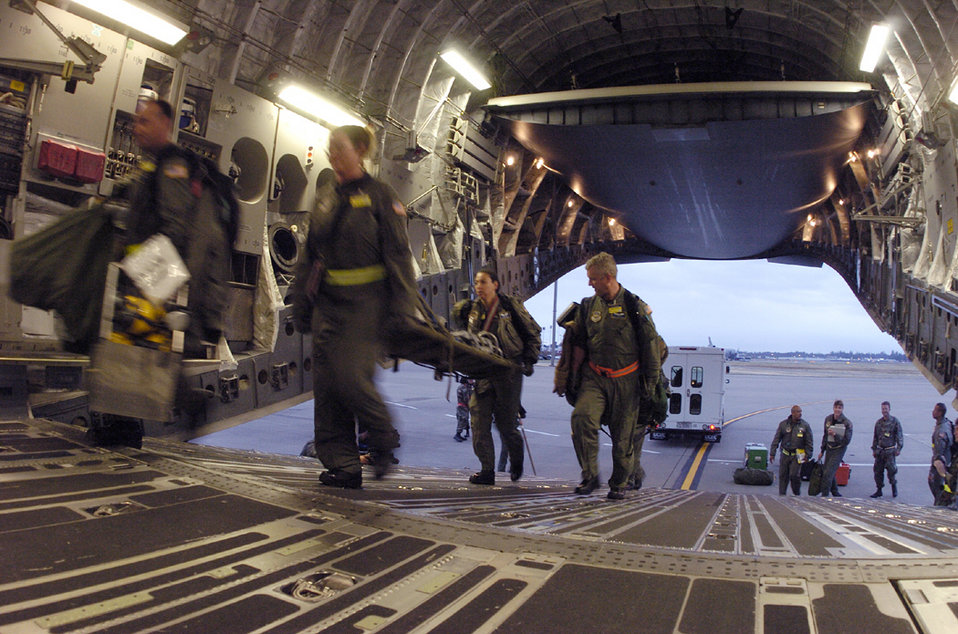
A day at the Rodeo

MCCHORD AIR FORCE BASE, Wash. -- Medical Airmen here carry their gear onboard a C-17 Globemaster III here June 21 to prepare for the arrival of patients. Configuring the aircraft to receive patients is one of the competition categories at Rodeo 2005.